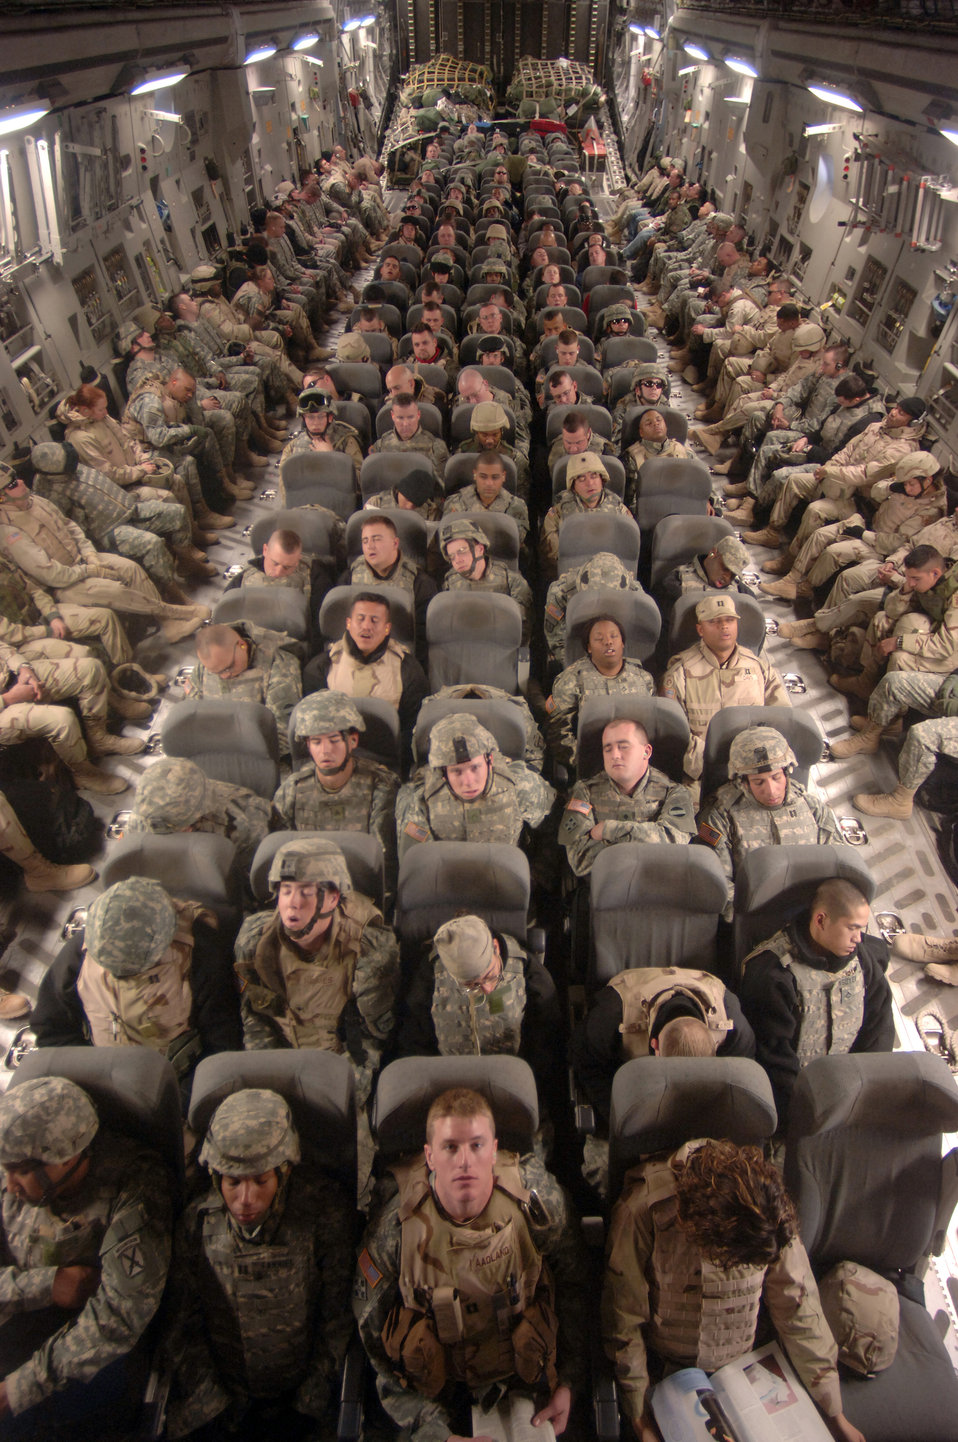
Troop movement

Capt. Erik Aadland (front and center) looks up from his reading during a flight over Iraq Saturday, Feb. 18, 2006. Most of the passengers were returning to Iraq after a two-week break. The aircraft and crew are from the 315th Airlift Squadron at Charleston Air Force Base, S.C., deployed for one year in Southwest Asia supporting operations Enduring Freedom and Iraqi Freedom.